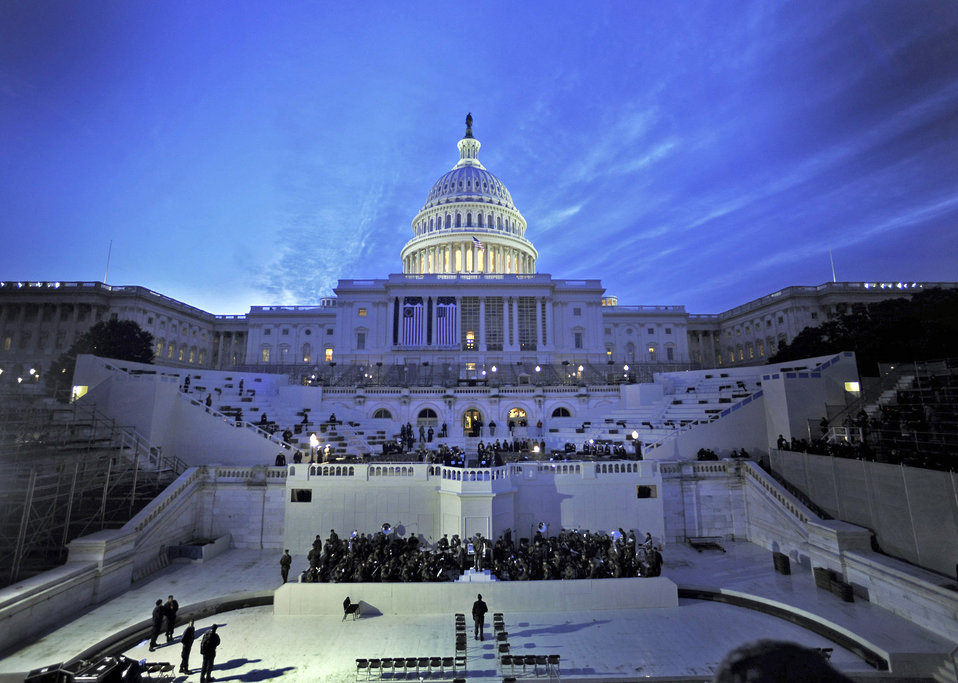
Chilly inauguration preparations

The Capitol Dome provides the background as U.S. servicemembers prepare for the 56th presidential inauguration rehearsal Jan. 11 in Washington, D.C. More than 5,000 men and women in uniform are providing military ceremonial support to the inauguration.